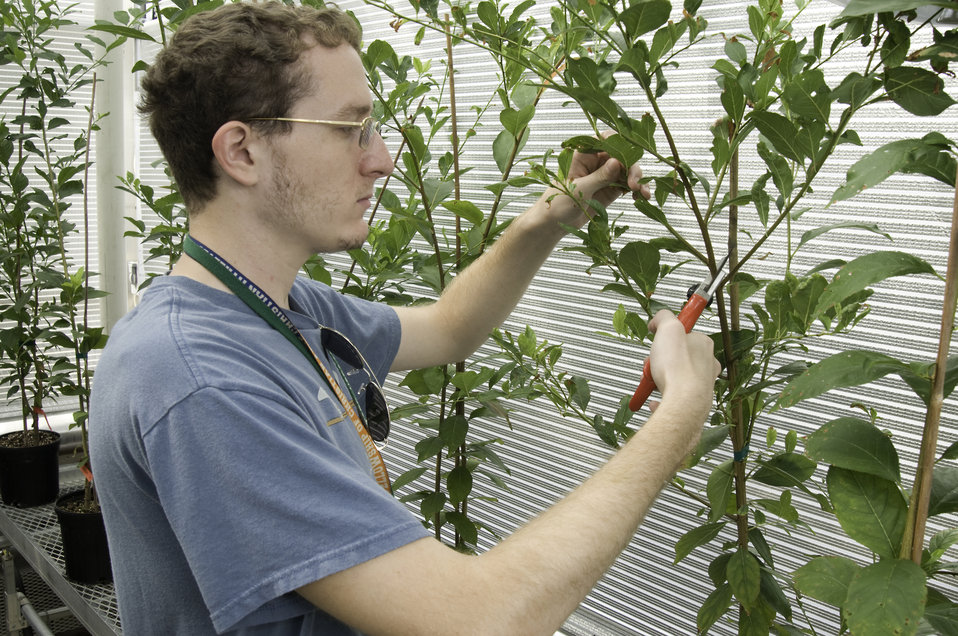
Junior Biology Major at the University of Maryland Baltimore Campus Alan Bone prunes a plant while assisting in research studying plant virology, how plants react to viruses in the National Germplasm Laboratory at the U.S. Department of Agriculture's (USDA) Agricultural Research Service (ARS), Beltsville Agricultural Research Center in Beltsville Maryland, Wednesday, July 28, 2010.